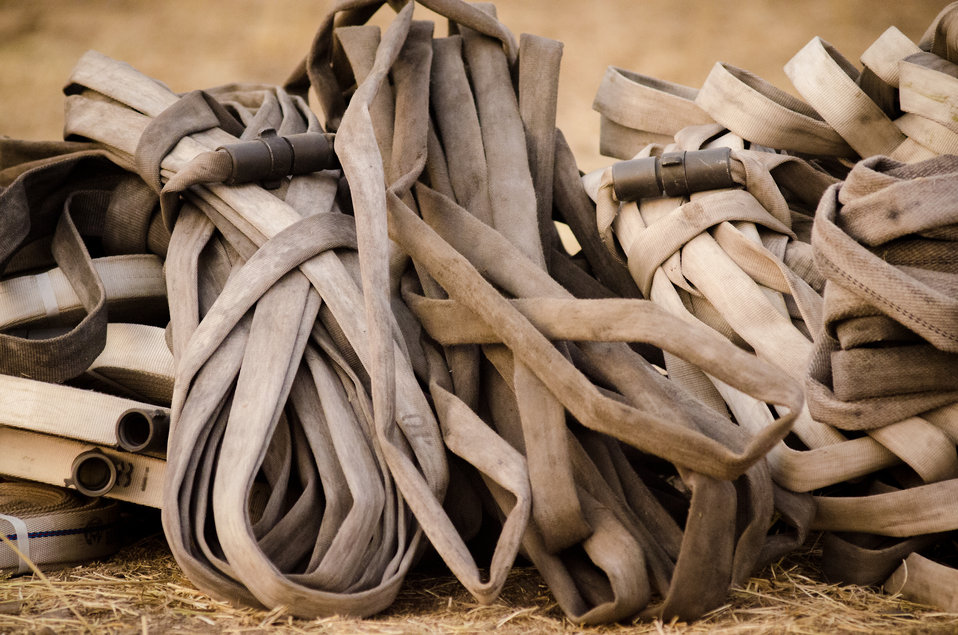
Used fire hoses are left at a hose winding station, near the supply cache, where they will be inspected for serviceability and if goodI, a machine will be used to efficiently roll the collapsible hoses into a neat roll, during the Beaver Creek Fire, west of Hailey, ID, in the U.S. Department of Agriculture (USDA) Forest Service (FS) and Sawtooth National Forest and Bureau of Land Management (BLM), on Wednesday, Aug 21, 2013. Structure protection at the scale of this fire often threatens homes, infrastructure, sacred and historic locations, requiring the use of miles of hose to preposition hand lines (water hoses) in the event of fire fighting and for sprinklers to keep remote homes, structures surrounding areas wet.